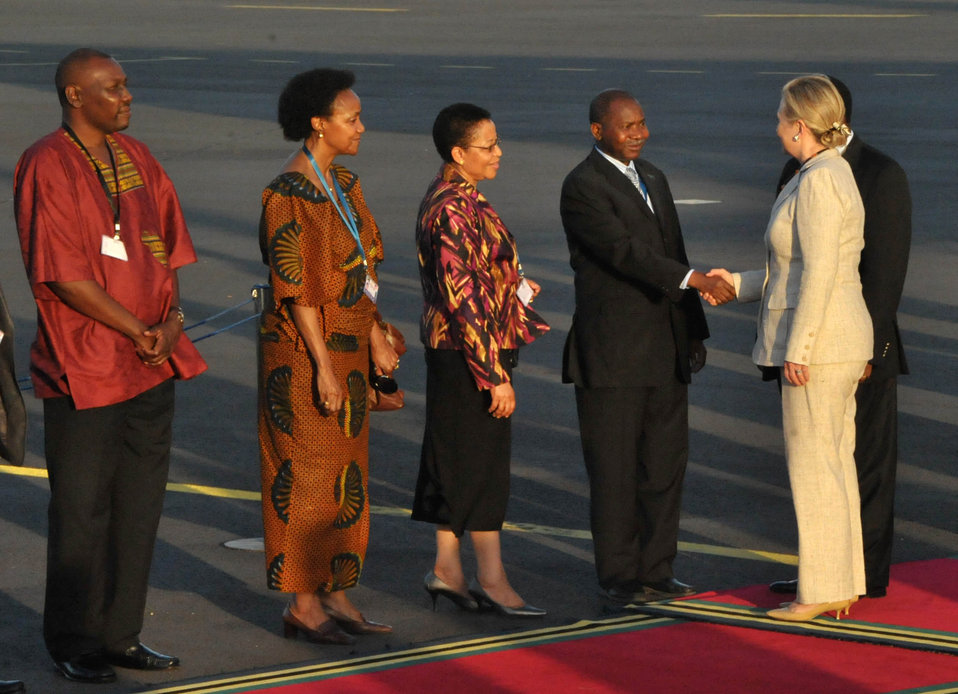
Secretary Clinton Is Greeted By Tanzanian Foreign Foreign Minister Membe

U.S Secretary of State Hillary Rodham Clinton is greeted by Tanzanian Foreign Affairs and International Cooperation Minister Bernard Membe, left, upon her arrival at the Julius Nyerere International Airport in Dar es Salaam, Tanzania, on June 11, 2011.